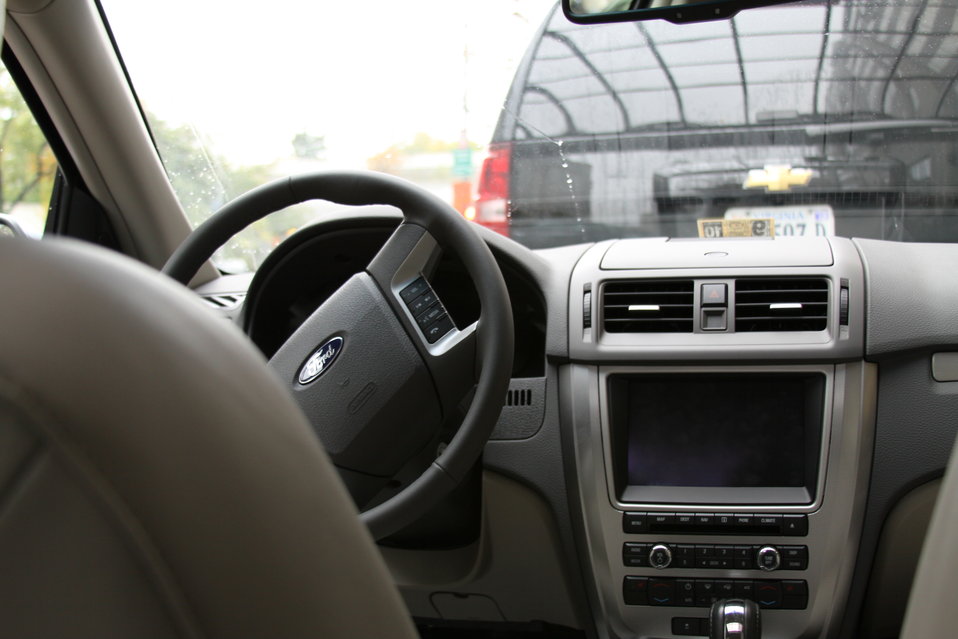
FCC Official Vehicle Tour